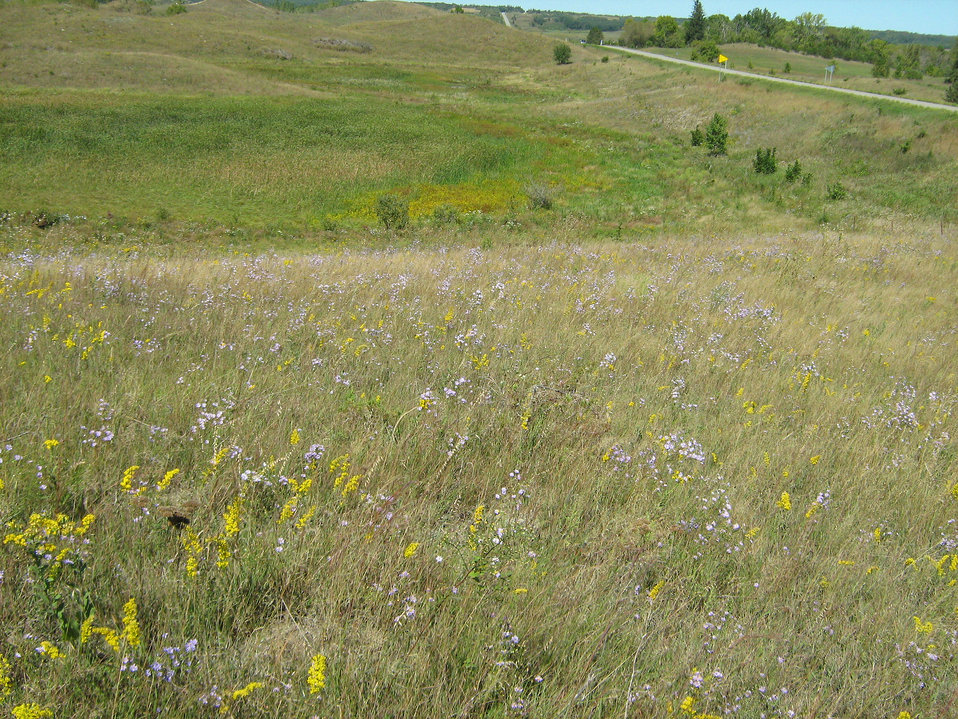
Native Pasture Rested in 2012.